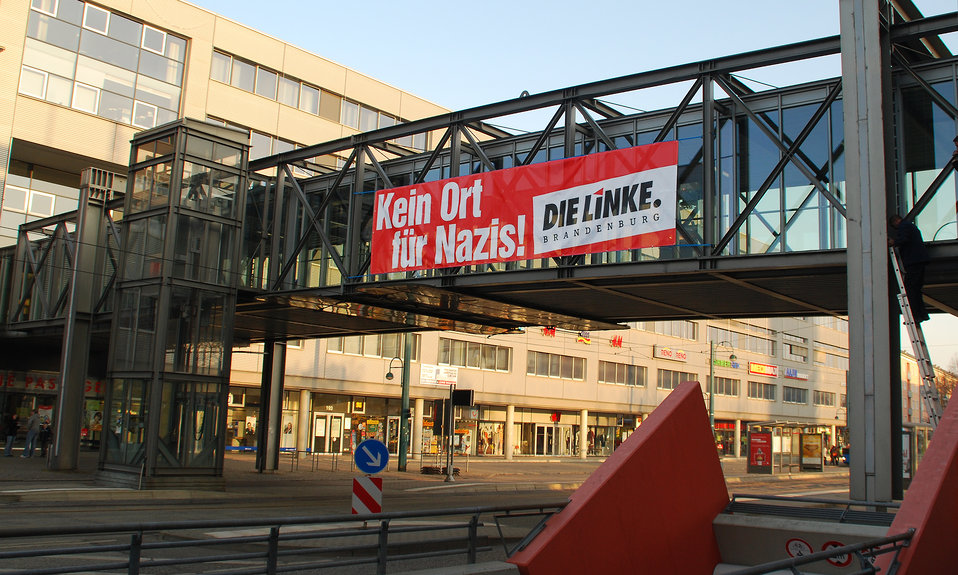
Proteste gegen den Nazi-Aufmarsch am 24.3.2012 in Frankfurt (Oder)